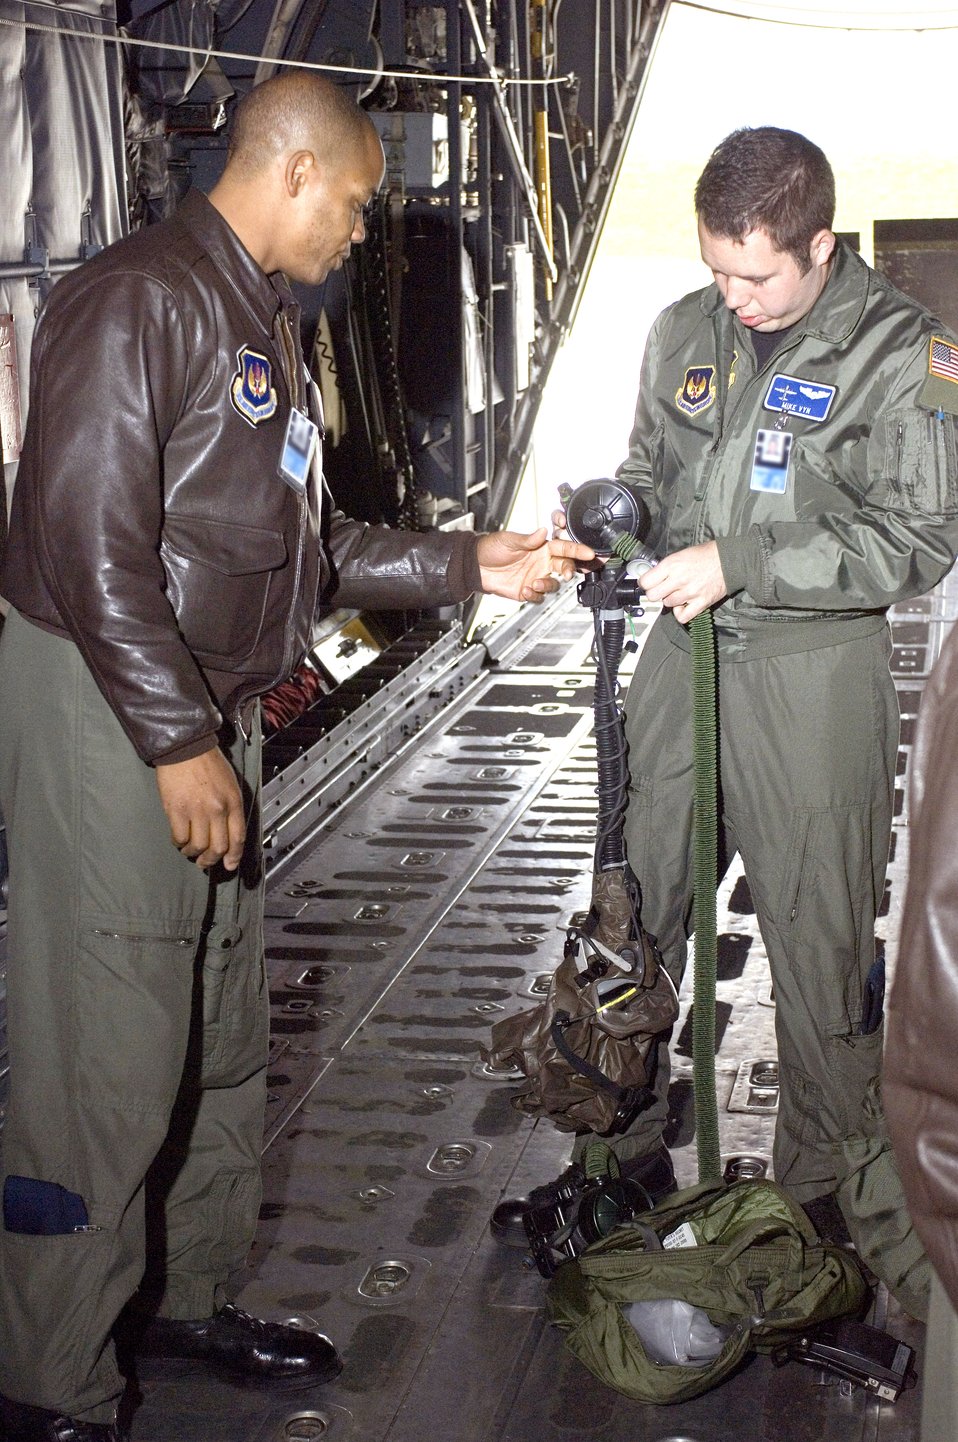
Egress training

Master Sgt. Lewis Holston (left) shows an emergency respiratory protection system to 1st Lt. Mike Vyn on a C-130 Hercules at Ramstein Air Base, Germany, on Thursday, June 1, 2006. The Airmen are assigned to the 37th Airlift Squadron at Ramstein, and were training in egress procedures while wearing the protective system.